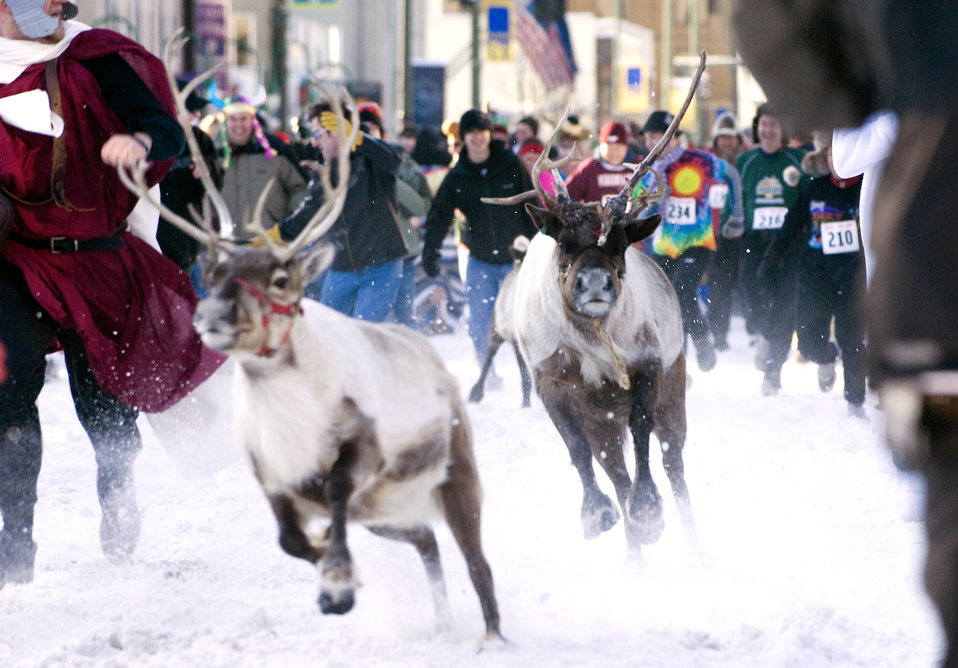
Santa's other reindeer

Reindeer race down the streets of Anchorage during the 2nd Annual Running of the Reindeer March 1 in Alaska. Colonel Eric Overture, an F-22 Raptor pilot and 477th Fighter Group commander at Elmendorf Air Force Base, Alaska, ran the two city blocks with the reindeer and was able to avoid the reindeer's antlers.